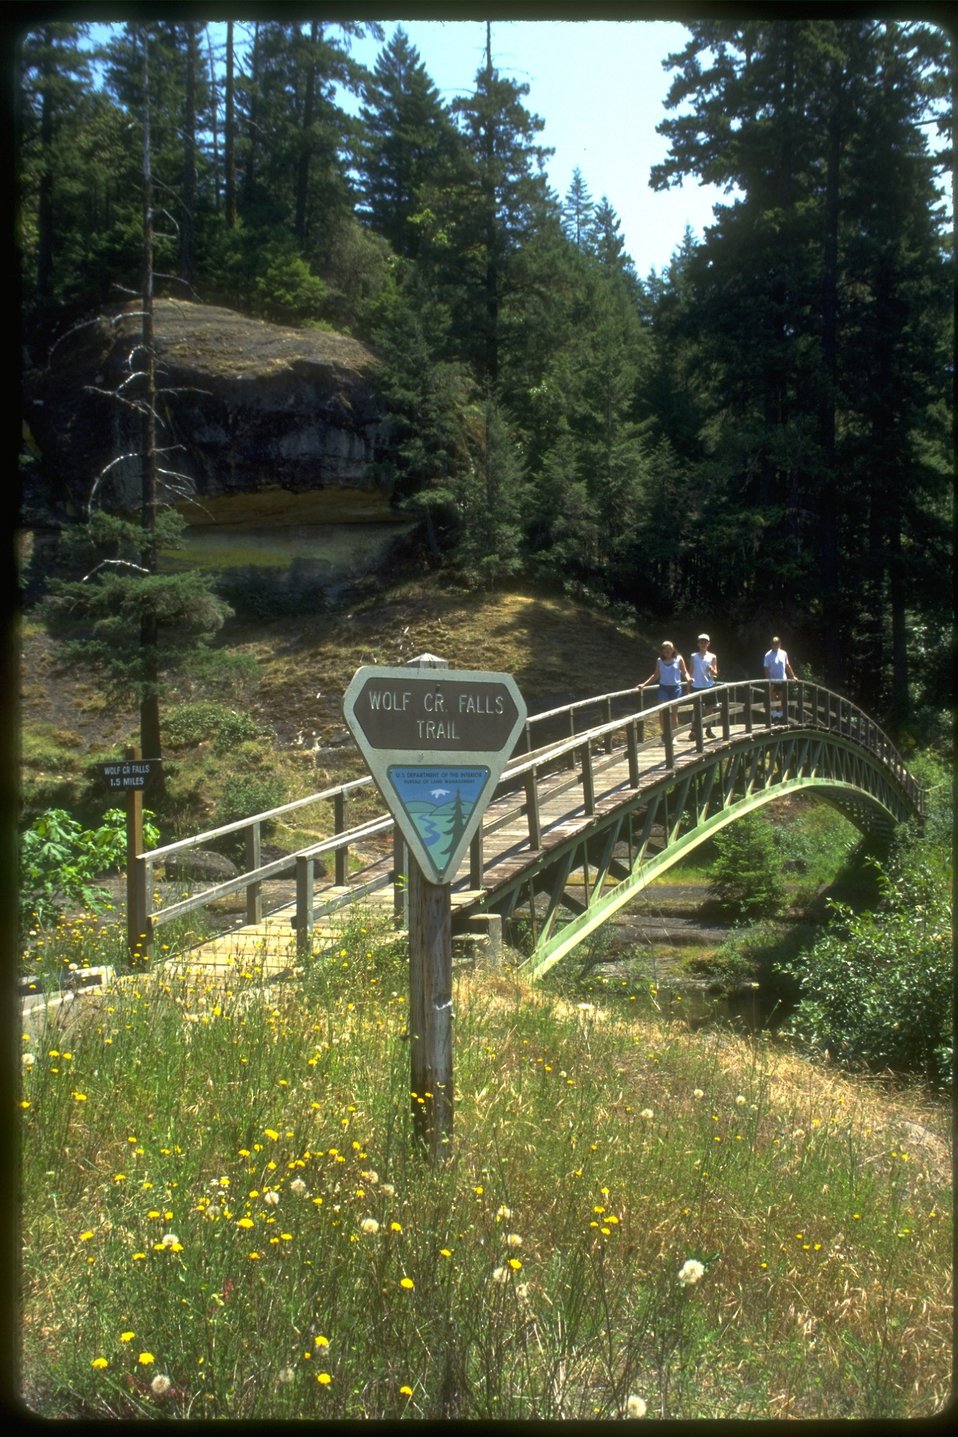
Large bridge along the Wolf Creek Falls Trail.